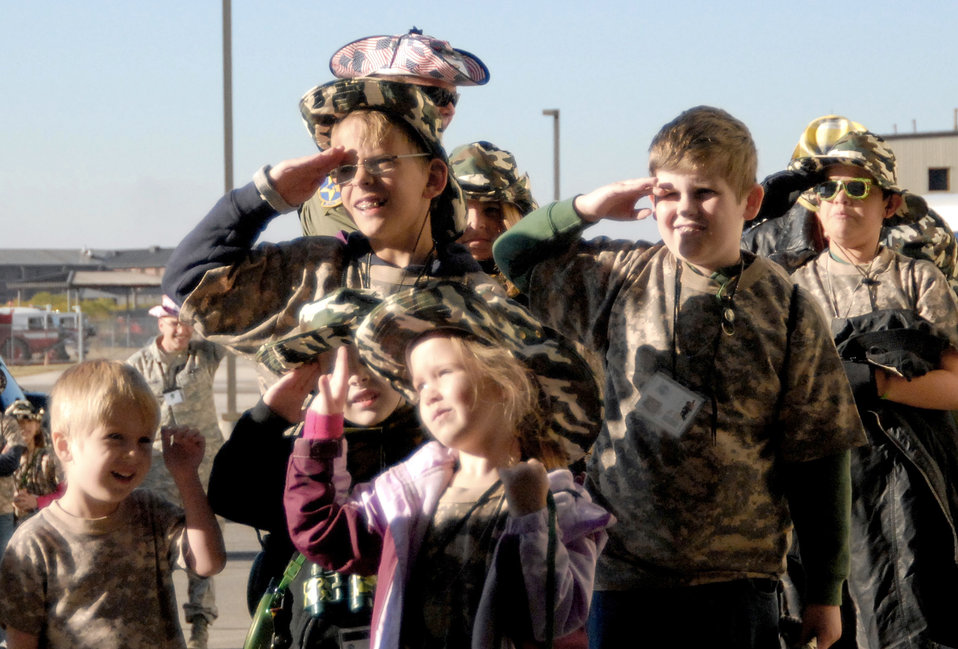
Goodfellow Operation KIDS

Before entering the deployed air base, youths with Operation KIDS learn how to salute when encountering an officer Nov. 13, 2010, at Goodfellow Air Force Base, Texas. At the